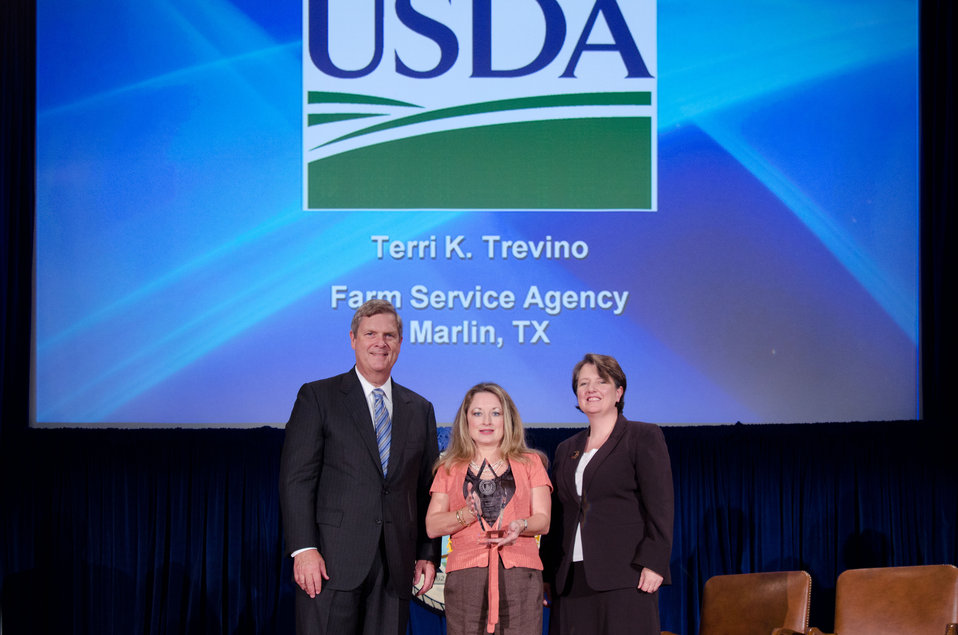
Agriculture Secretary Tom Vilsack (l) and Deputy Secretary Kathleen Merrigan (r), presents the Award for Personal and Professional Excellence to Terri K. Trevino, Farm Service Agency, Marlin, TX. For your personal, professional and outstanding contribution to USDA Farm Service Agency’s internal/external customers and the agricultural community in Falls County, Texas. On Wednesday, September 14, 2011 in the Jefferson Auditorium at the US Department of Agriculture in Washington, DC.